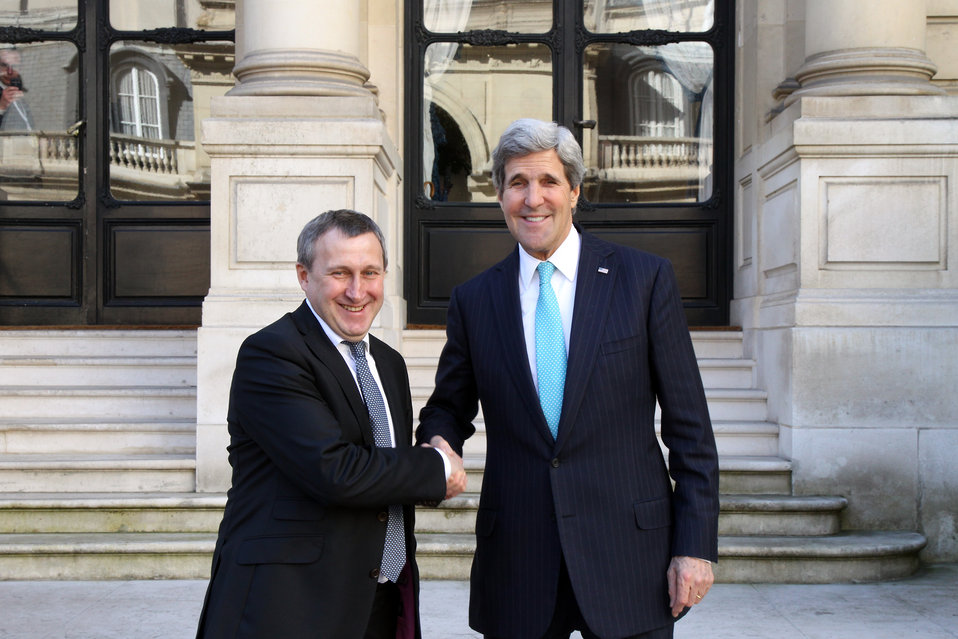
Secretary Kerry Meets With Ukrainian Foreign Minister Deshchytsia

U.S. Secretary of State John Kerry meets with Ukrainian Foreign Minister Andrii Deshchytsia after the Budapest Memorandum Ministerial in Paris, France, on March 5, 2014.